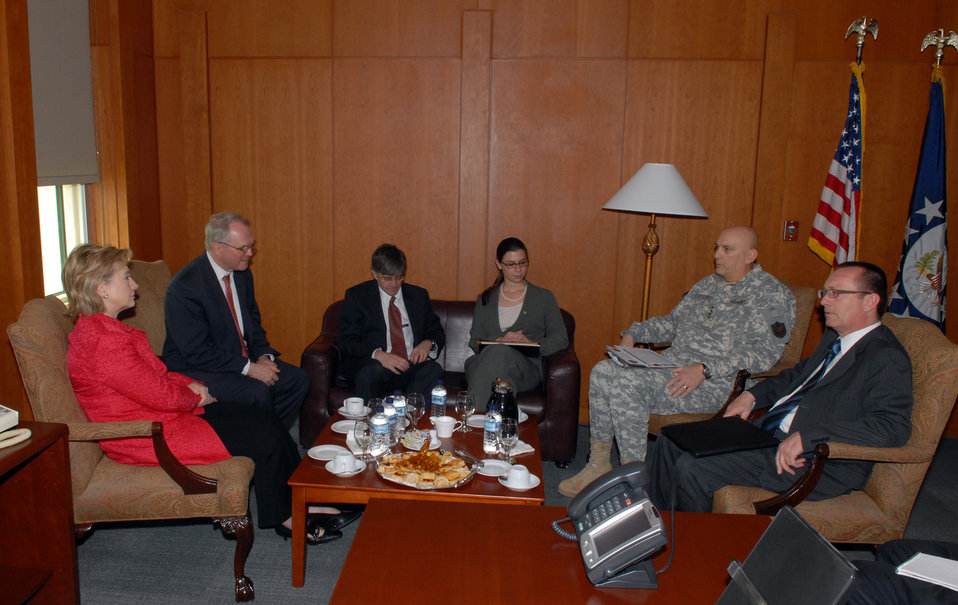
Secretary Clinton Meets With Leaders in Iraq

U.S. Secretary of State Hillary Rodham Clinton is greeted by newly arrived U.S. Ambassador to Iraq Christopher R. Hill, Deputy Secretary James Steinberg, Commanding General, Multi-National Force—Iraq Commanding General Raymond T. Odierno, and U.S. Ambassador to Lebanon Jeffrey D. Feltman.